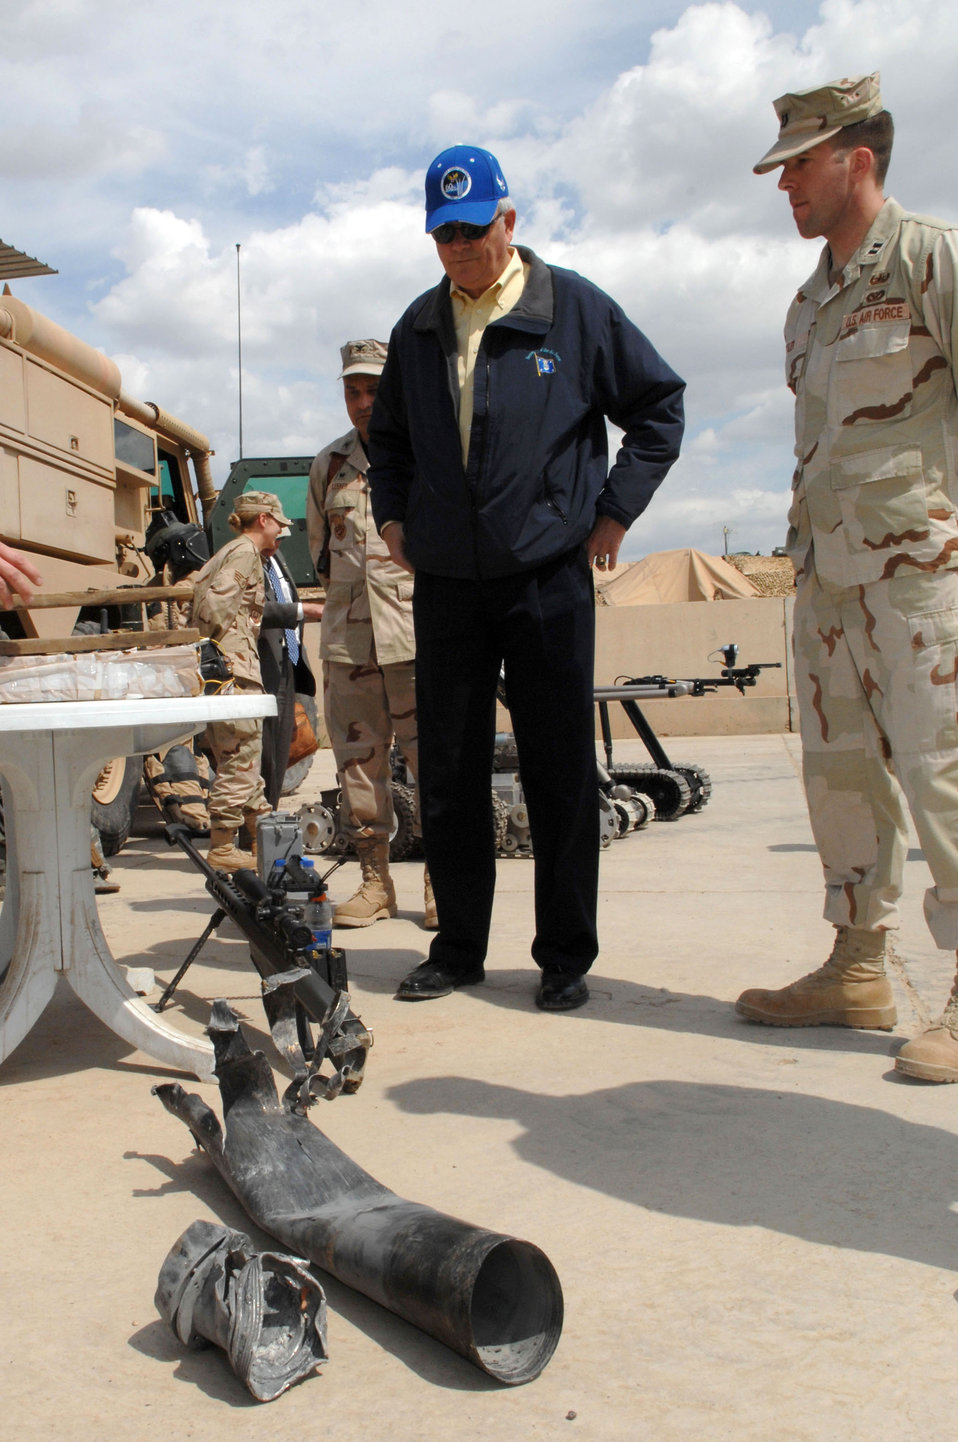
SECAF visits Airmen at Kirkuk

Capt. Joshua Tyler, the explosive ordnance disposal flight commander, shows Secretary of the Air Force, Michael W. Wynne, a rocket that was used by insurgents in the city of Kirkuk just two days prior to the secretary's visit March 28 at Kirkuk Air Base in Iraq.